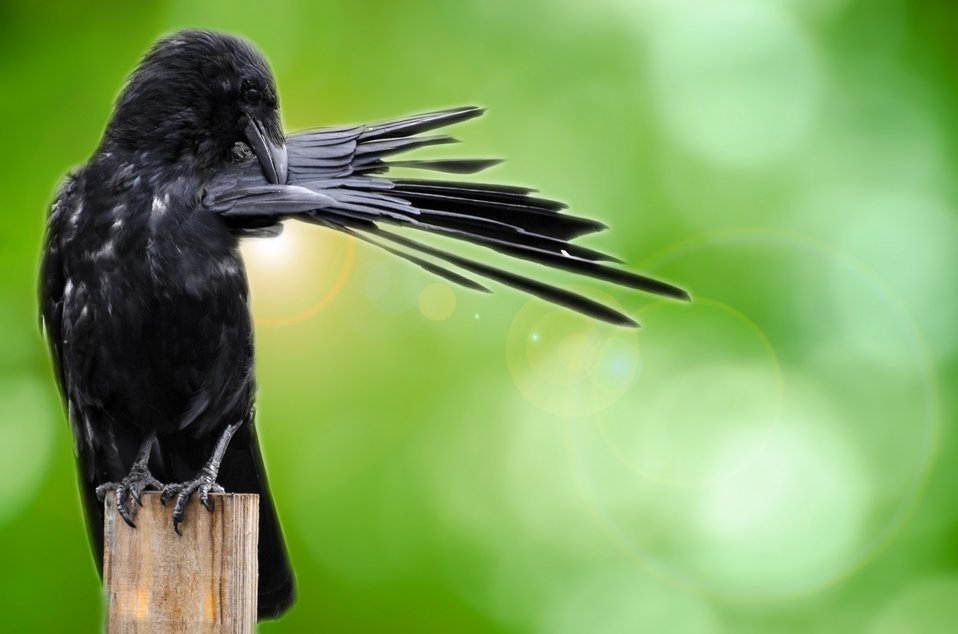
Crow on the green background.